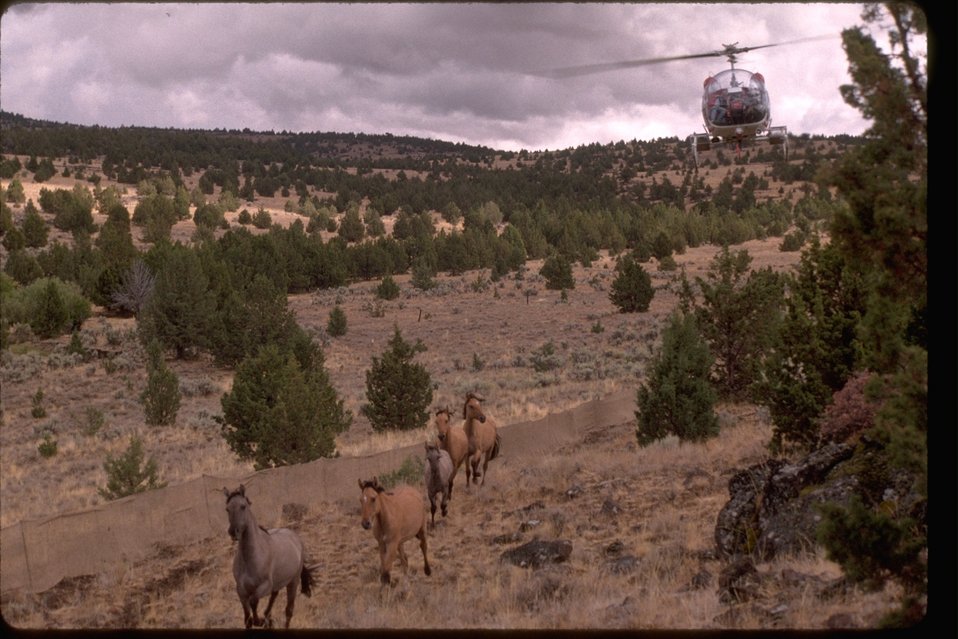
The Last Push. Kiger mustangs enter trap in the Kiger Herd Management Area, Burns District, Southeastern Oregon.